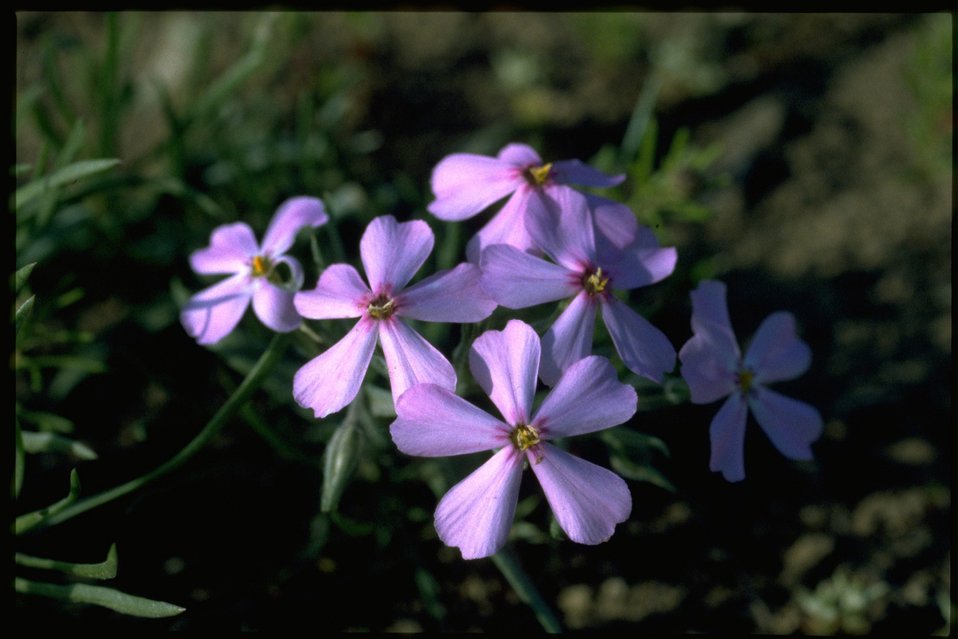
Closeup shot Longleaf Phlox, Phlox Longifolia, wildflowers.